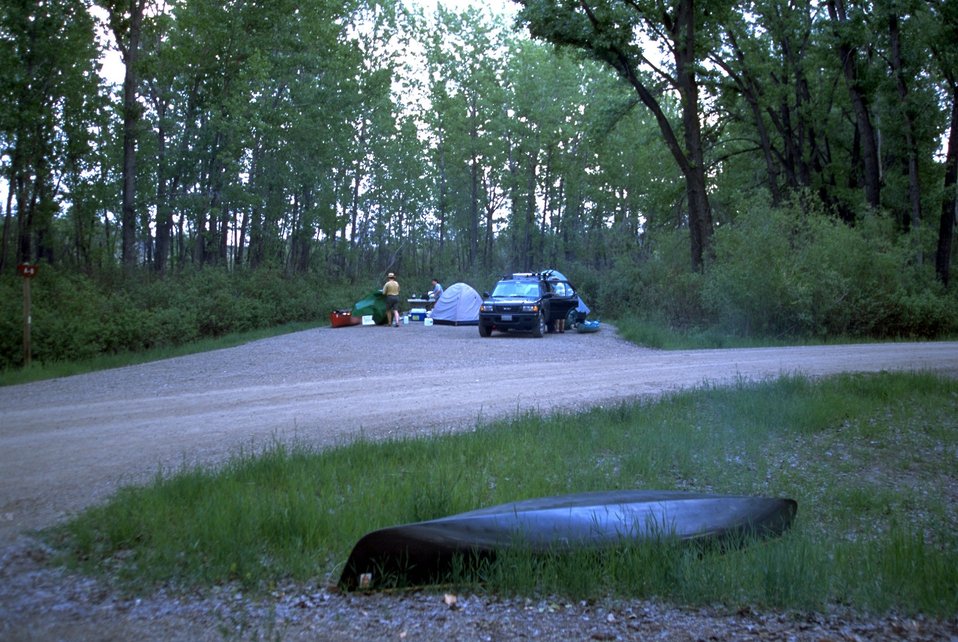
Camping at Kipp Recreation Site